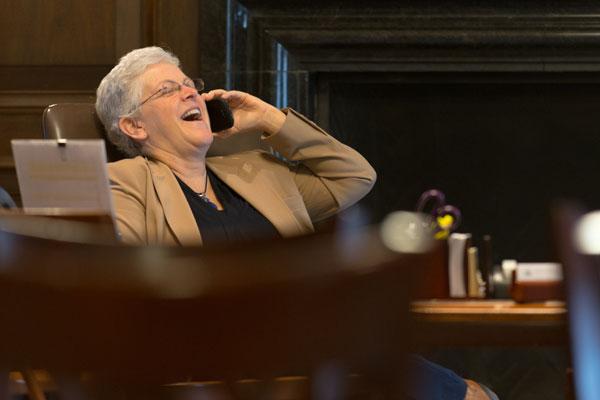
Day in the Life - April 4, 2014

12:57 pm - It’s not all hard work. McCarthy shares a lighter moment during the course of the day. (8/12)